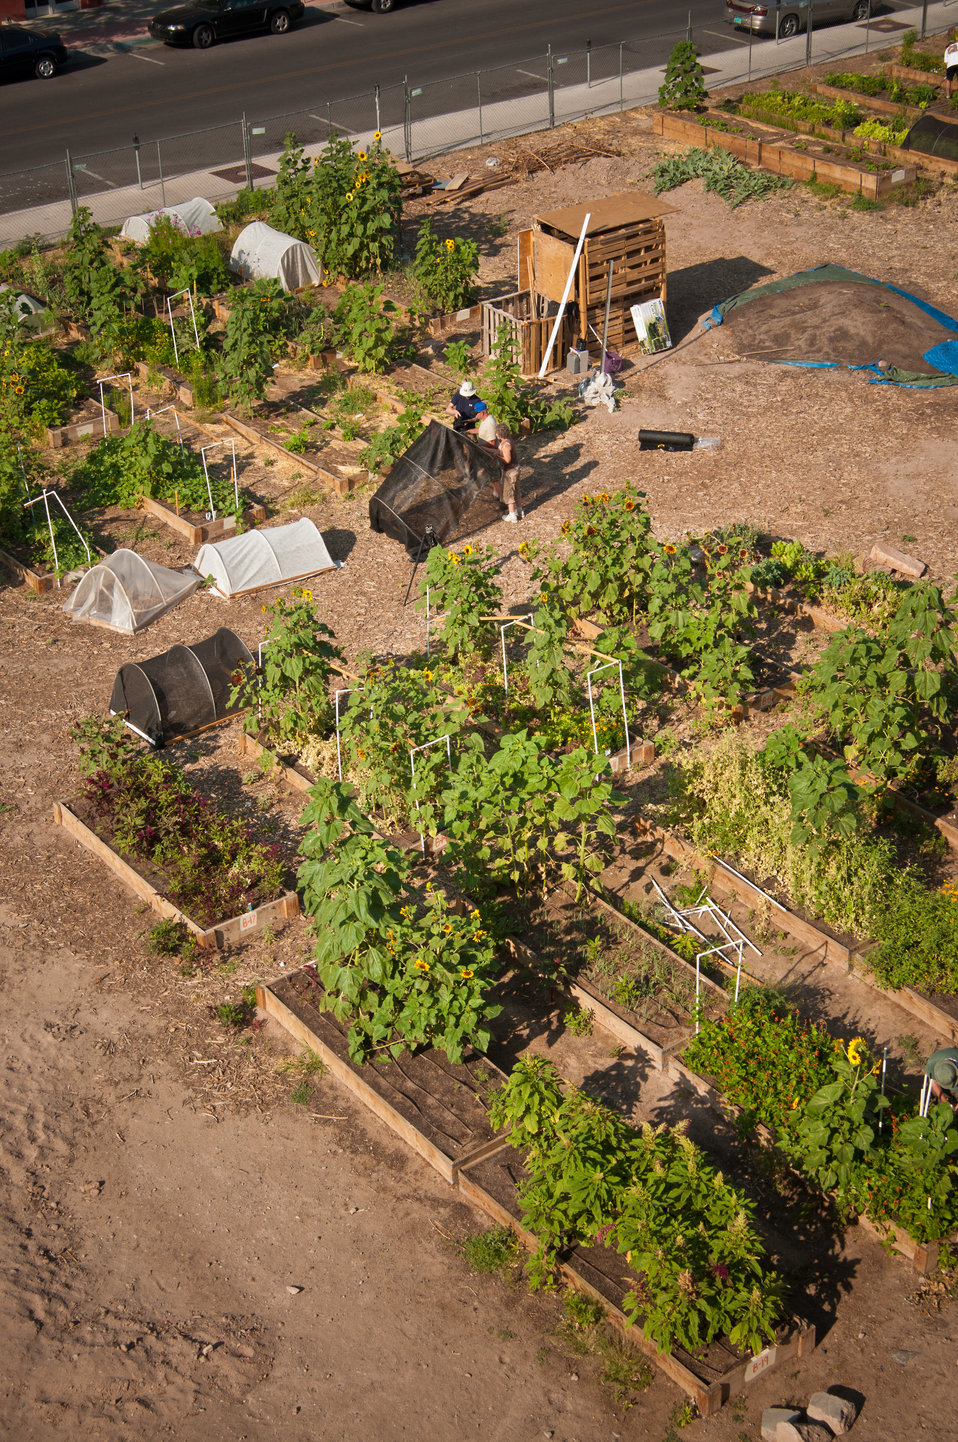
The La Montanita Co-op Veteran Farm Project (VFP) funded through the U.S. Department of Agriculture's (USDA) Agricultural Marketing Service (AMS) Specialty Crop Grant program provides veterans workshops on sustainable farming practices, hands-on gardening and farming experience. This collaboration between La Montanita Co-op, Downtown Action Team, the Veteran’s Administration, the New Mexico Department of Agriculture and Holistic Management International provides the initial training for veterans to start or work at sustainable agriculture businesses. VFP grows produce at their Alvarado Urban Farm in Albuquerque, NM year round. The VFP gardens will supply a stand at the Veteran Affairs (VA) Farmers’ Market once a week over the summer, feed project participants and fill Community Supported Agriculture (CSA) boxes for low-income families in Albuquerque, New Mexico.